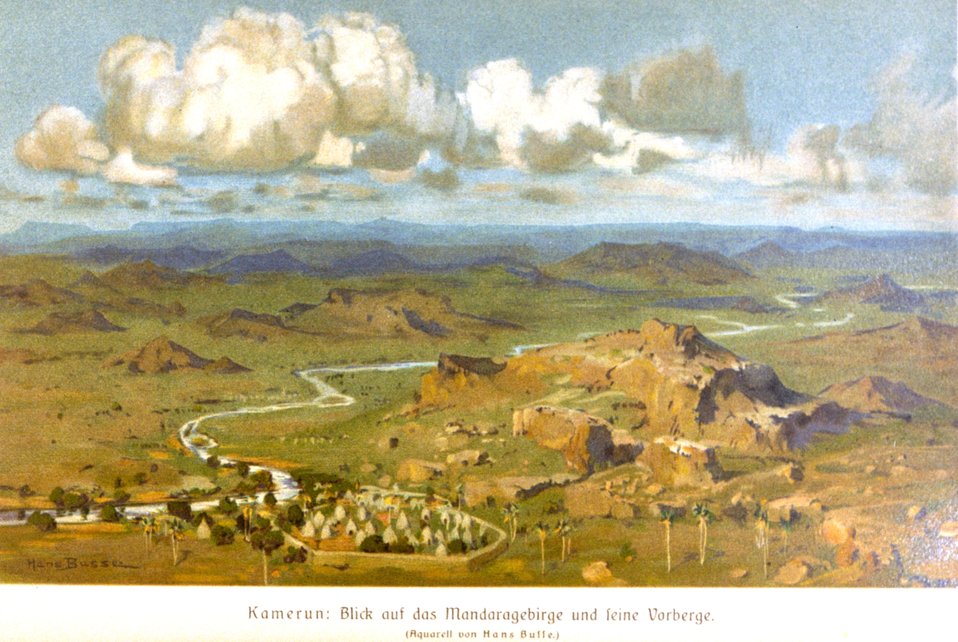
Cameroon German colony - a village in the interior. In: 'Das Deutsche Kolonialreich,' by Hans Meyer, 1909. Vol I, p. 608. Library Call Number: Cfd M612 d